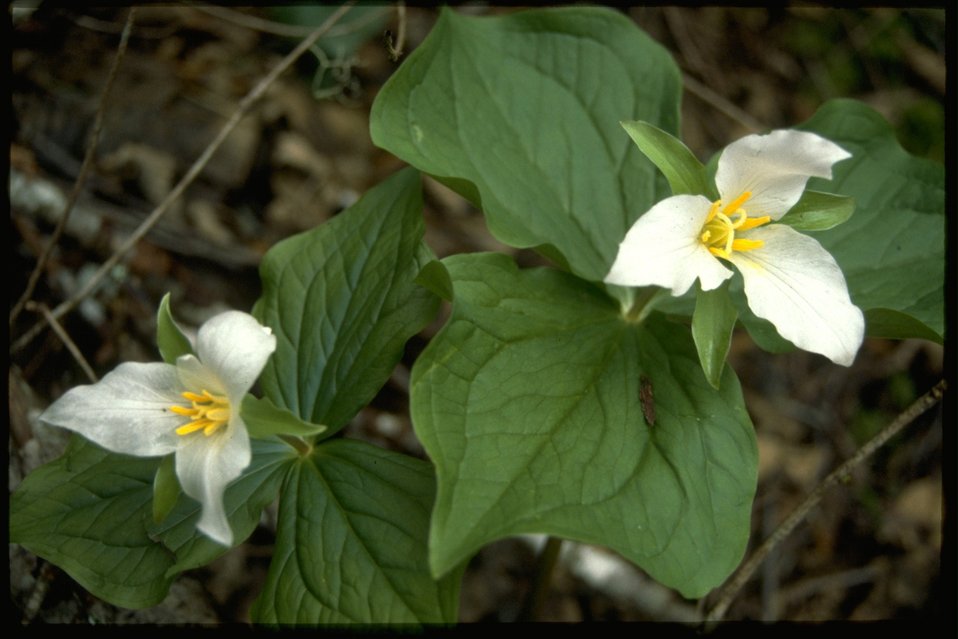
Foxglove found in a clear cut site.